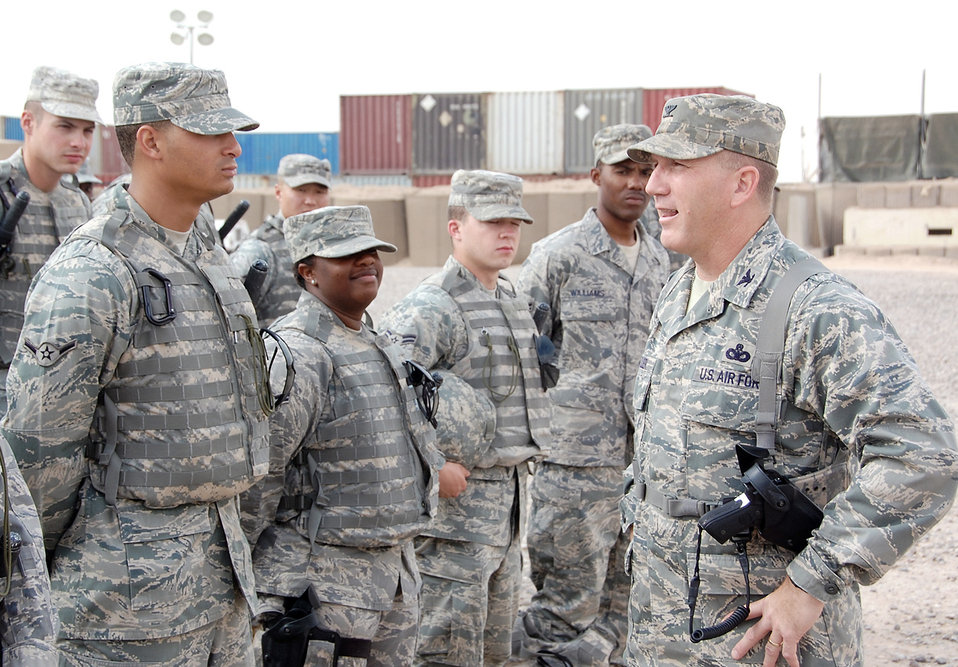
Airmen contribute to the fight in Iraq

Col. Alan Metzler addresses members of the 887th Expeditionary Security Forces Squadron during their morning guardmount May 12 at Camp Bucca, Iraq. Colonel Metzler is the 586th Air Expeditionary Group commander and leads one of three groups in the Air Force dedicated to joint expeditionary taskings in the area of responsibility.